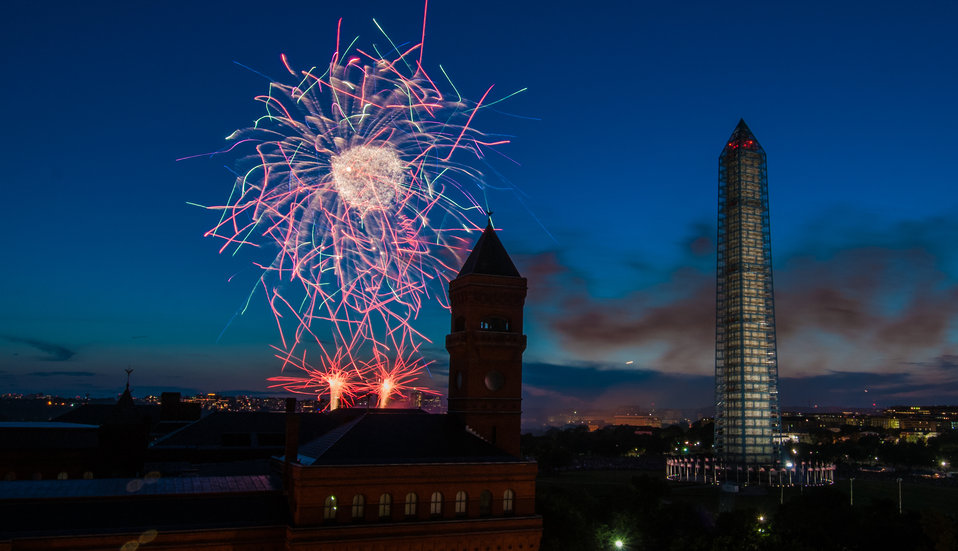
4th of July fireworks as seen from the U.S. Department of Agriculture (USDA) headquarters building, with the USDA Forest Service Yates Building in the foreground, left, and the Washington Monument in Washington, D.C., on July 4, 2013.